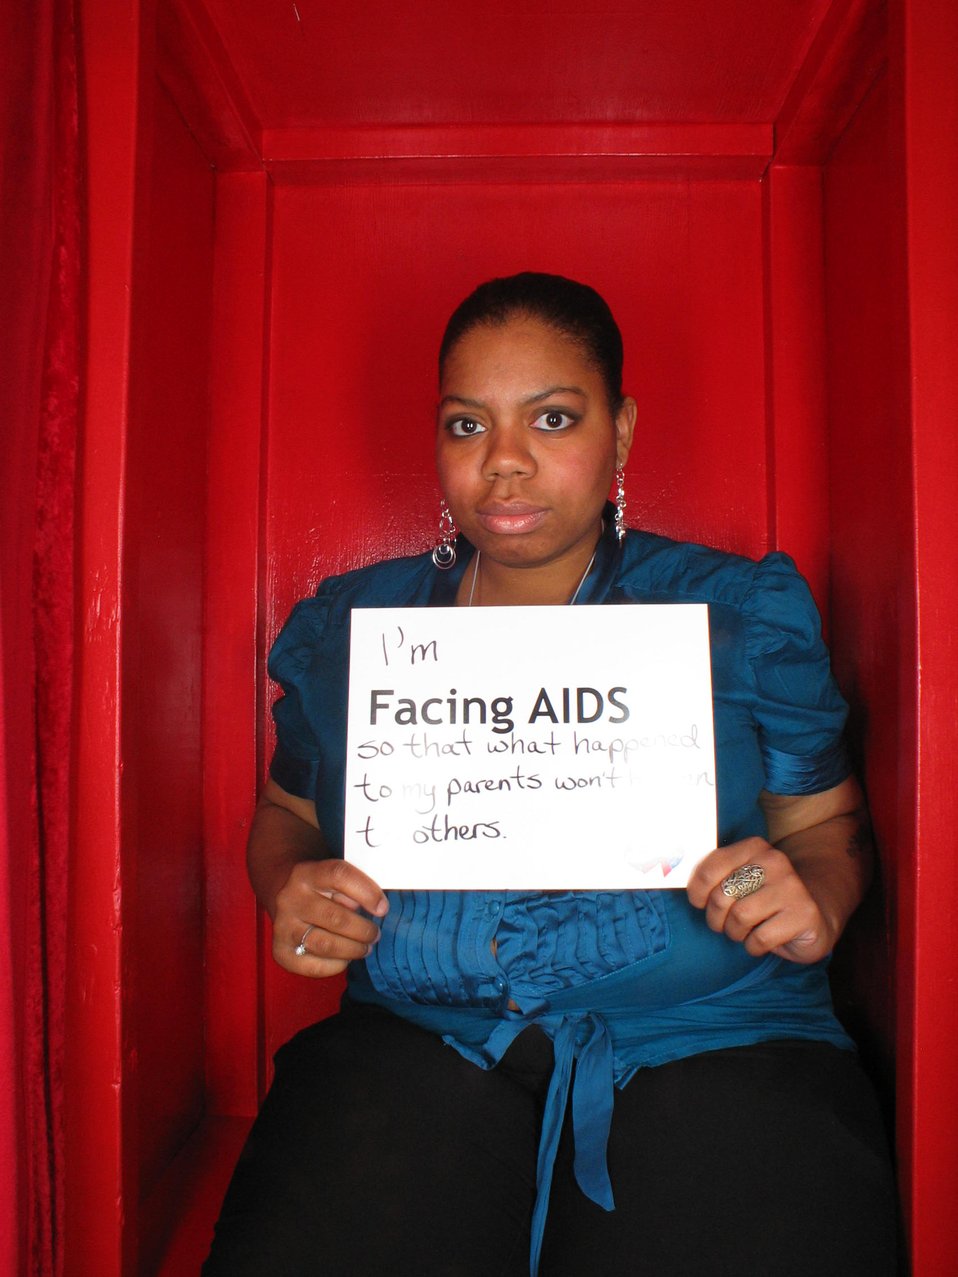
I'm Facing AIDS so that what happened to my parents won't happen to others.